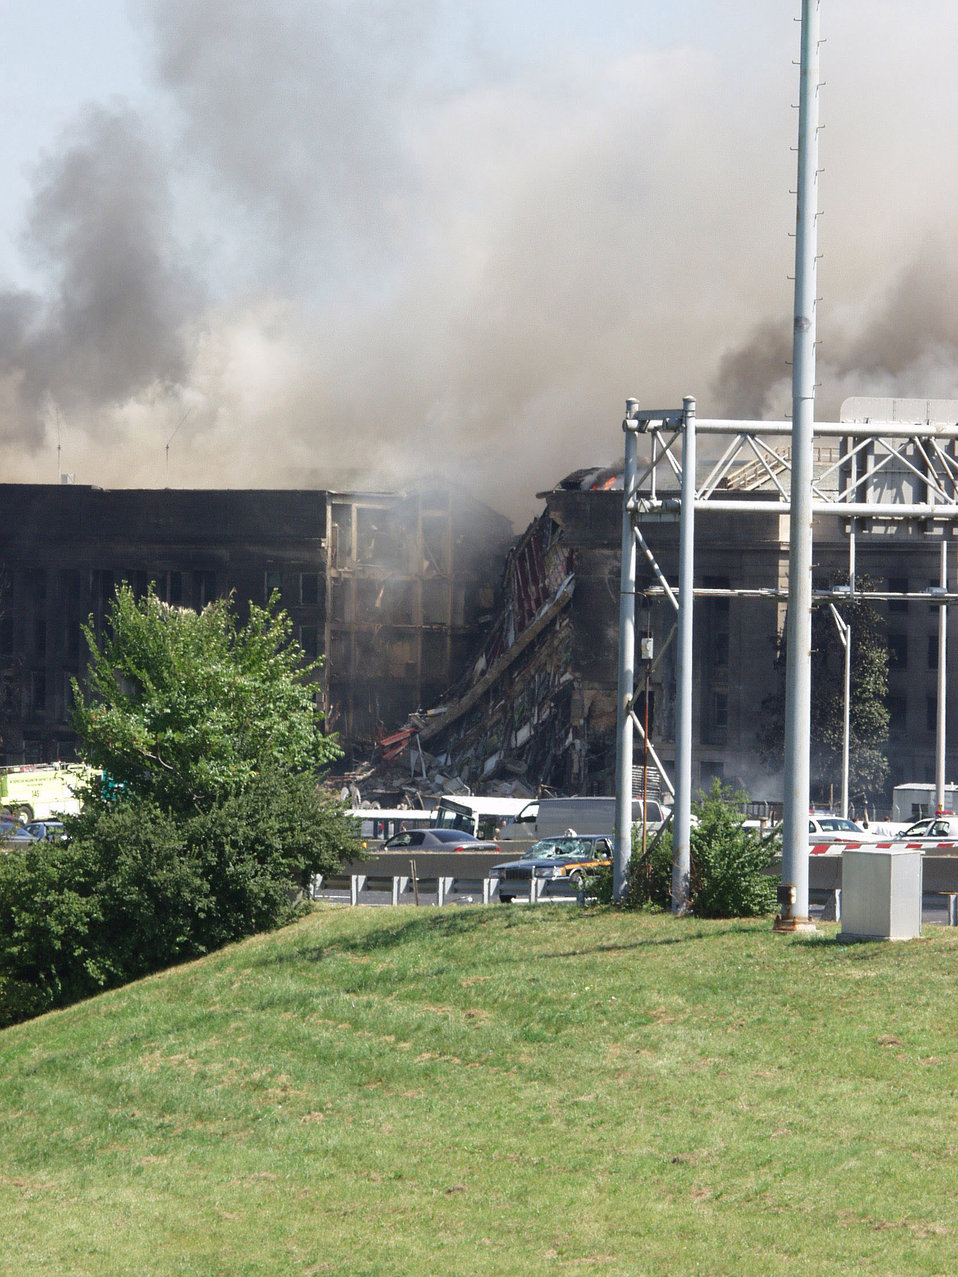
Pentagon Damage

WASHINGTON -- A section of the Pentagon was destroyed when the building was struck by a hijacked commercial airliner on Sept. 11, 2001. Injured workers were treated or taken to area hospitals, while firefighters tried to extenguish flames.